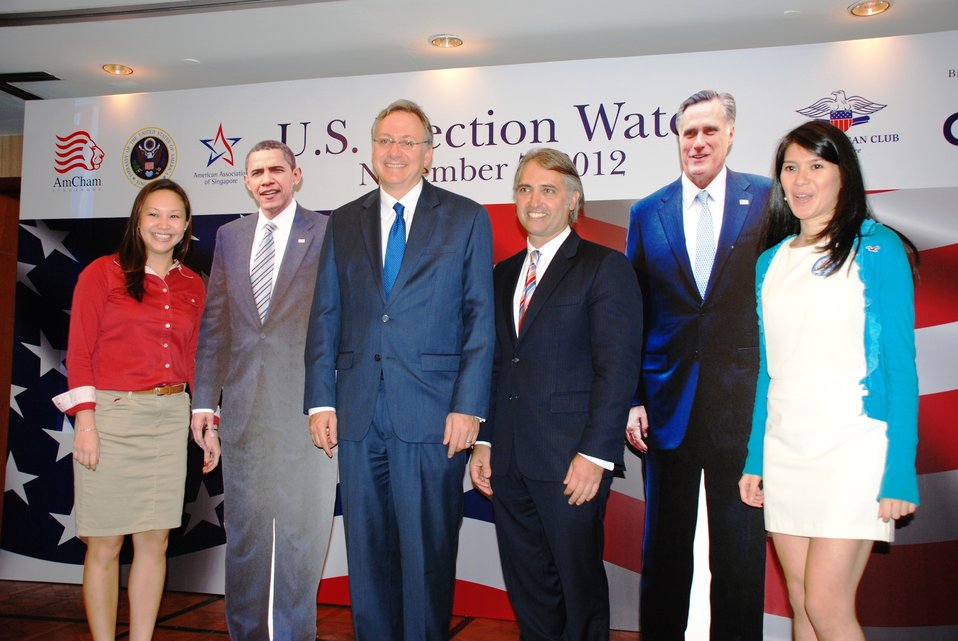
Ambassador Adelman Poses for a Photo With the Candidates

U.S. Ambassador to Singapore David Adelman poses for a photo with cutouts of the 2012 presidential candidates at the 2012 U.S. Election Watch event at the U.S. Embassy in Singapore, November 7, 2012.